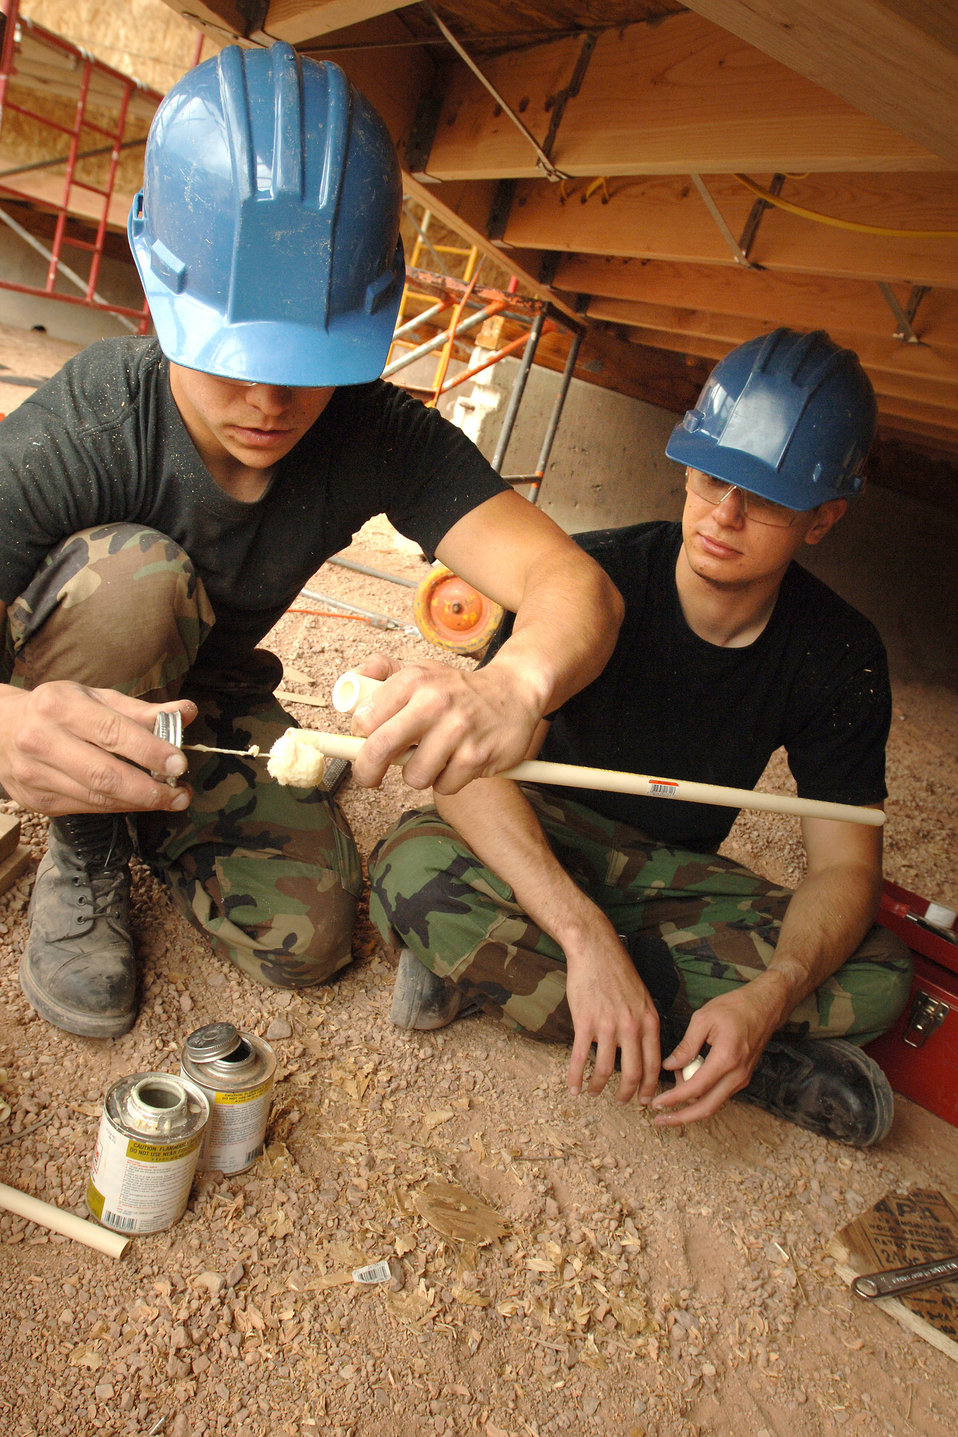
Summer lab gives cadets engineering experience

Air Force Academy Cadet 2nd Class Anthony Hylko and Senior Tyler Hellig of the North Carolina State University ROTC program prepare a section of PVC pipe for installation under a house. The two cadets are participating in the Field Engineering and Readiness Laboratory course at the Academy. The course exposes cadets to several aspects of civil engineering, including heavy equipment operation, steel bridge construction, designing and pouring concrete beams and paving portions of a road.